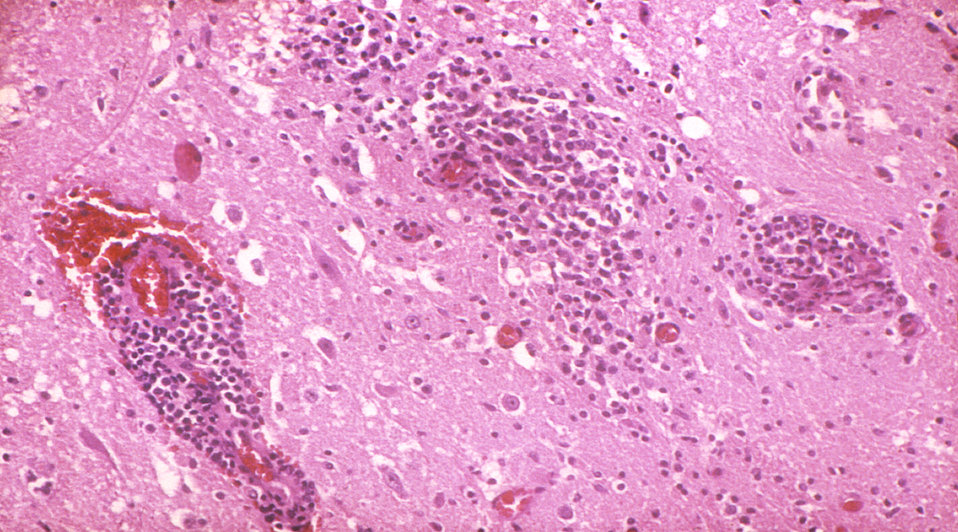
This photomicrograph revealed some of the histopathologic changes in this specimen of equine brain tissue revealing the perivascular inflammation associated with this West Nile virus (WNV) infection.Infectious Agent